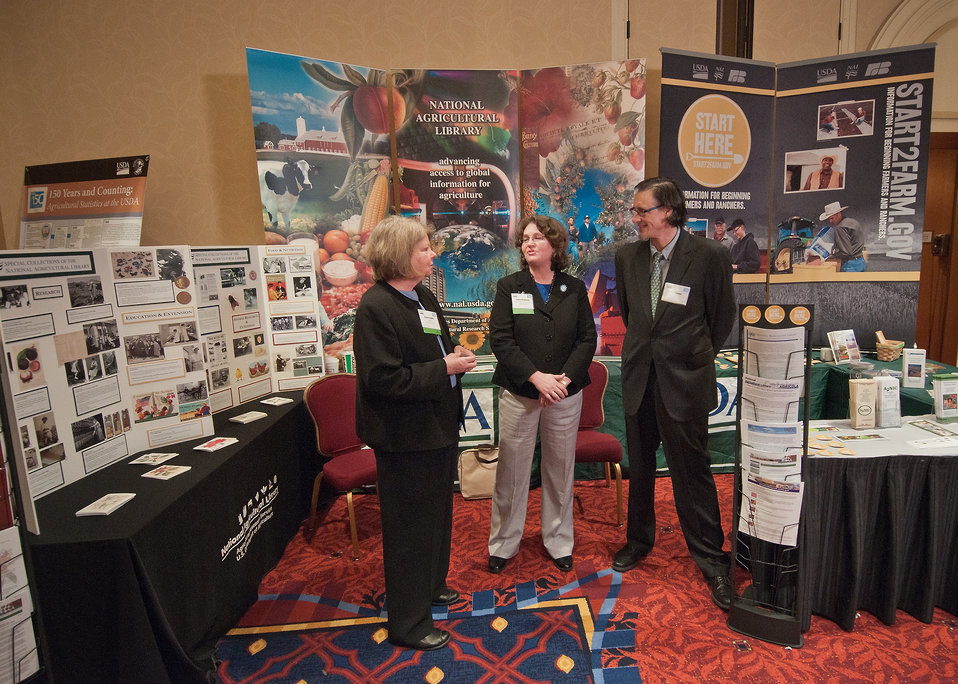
From left: Susan Fugate, Louise Reynnells and Stu Gagnon welcomed visitors to the United States Department of Agriculture National Agricultural Library booth at the 2012 Agricultural Outlook Forum, “Moving Agriculture Forward, Growing, Innovating and Celebrating 150 Years” held at the Crystal gateway Marriott Hotel Arlington, Virginia, Friday, February 24, 2012. This year’s forum coincides with the 150th anniversary of the Department of Agriculture addressing economics, marketing, research, food safety, nutrition, conservation, rural development, alternative energy, trade and many other agricultural issues.